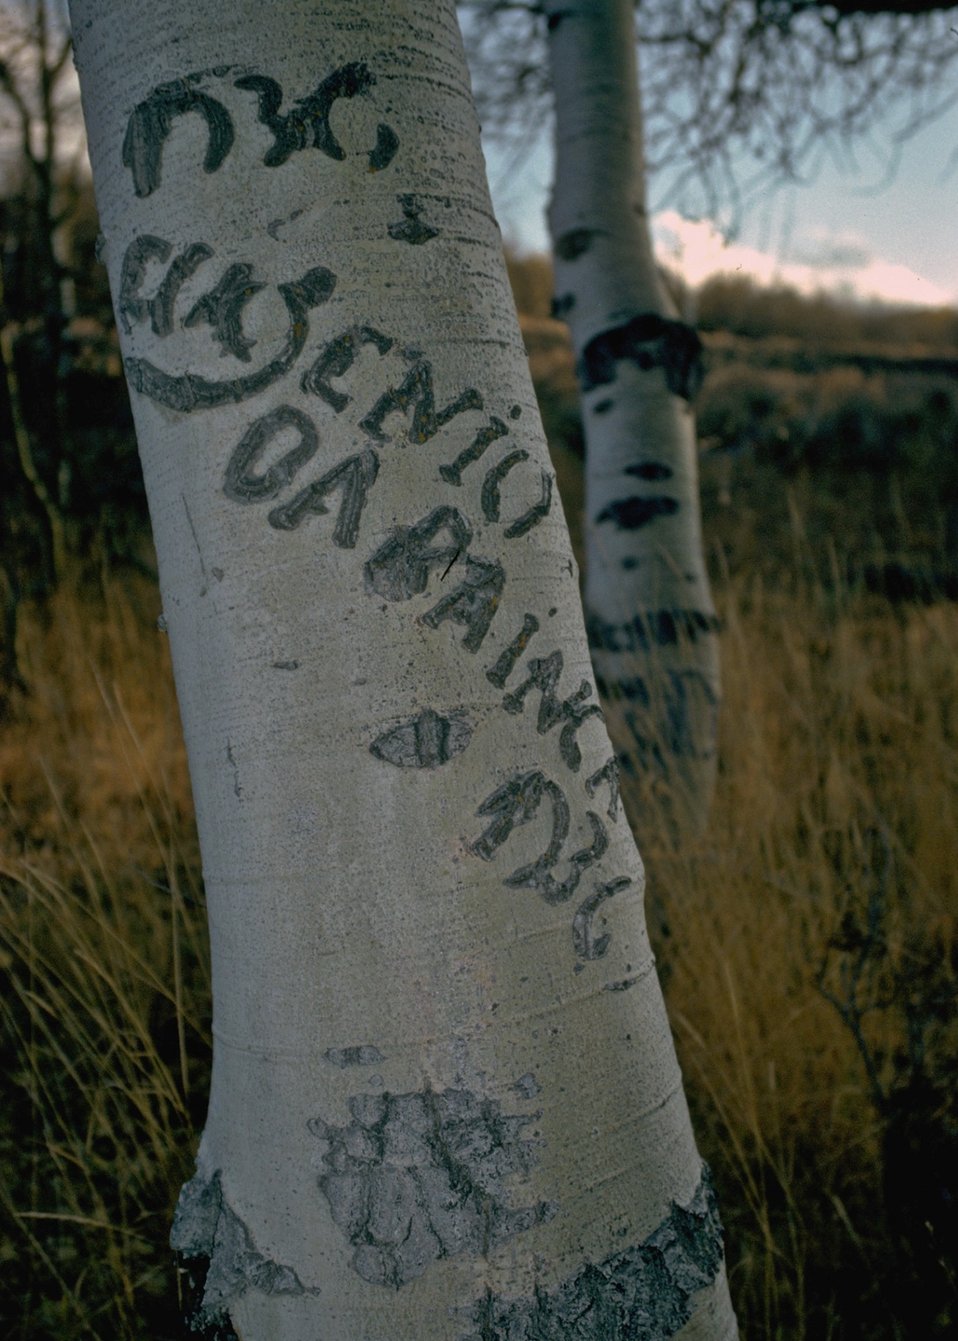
Basque Sheepherder's Dendroglyphs (circa 1930's). Found in the Steens Mountain area in Southeast Oregon.